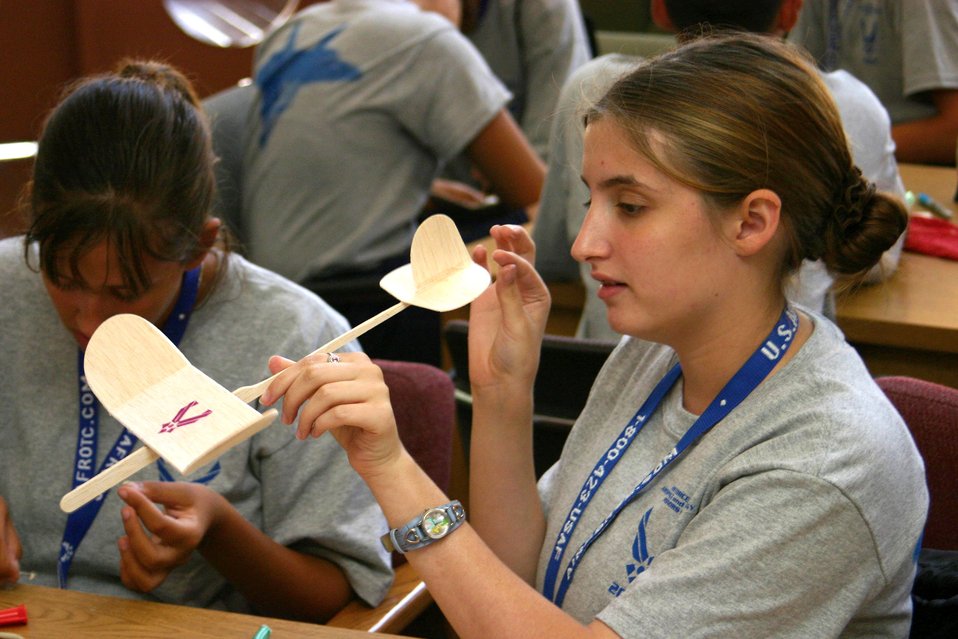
Junior ROTC cadets explore Air Force careers

Air Force Junior ROTC Cadet Mylinda Winton looks over her nearly finished glider July 23 during a construction contest for the Junior ROTC Aerospace and Technology Honor Camp at the University of New Mexico in Albuquerque. Cadets from Junior ROTC units worldwide visited various science and technology centers as part of the 2007 Air Force Junior ROTC Aerospace and Technology Honor Camps. Approximately 450 cadets attended one of eight camps this year in New Mexico and Oklahoma. Currently, there are more than 100,000 cadets in the Air Force Junior ROTC program worldwide.